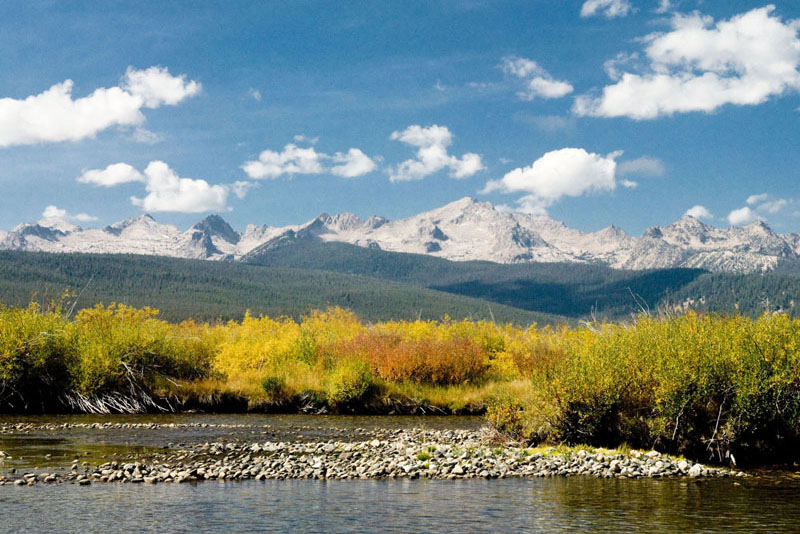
Sawtooth Mountains, Idaho, 2007 USEPA photo by Danny Hart